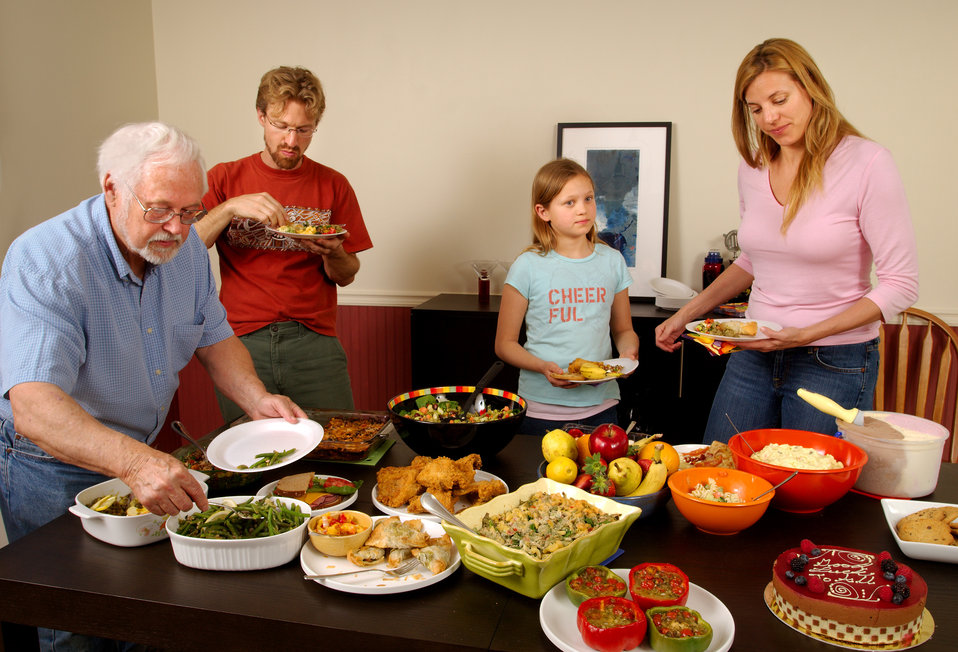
Here, a group of dinner party attendees, were gathered around a table serving themselves from a wide varieties of foods, representing a number of different food groups: grains, fruits, vegetables, milk products, meats/poultry/fish, and nuts/seeds/legumes.